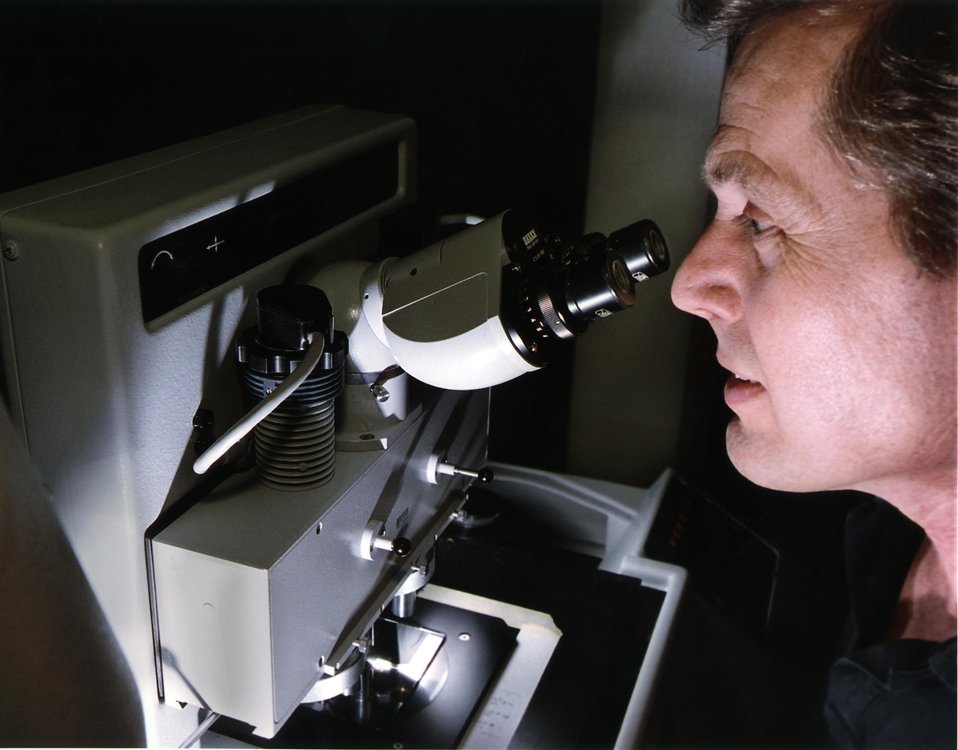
SANDIA SCIENTIST EXAMINES THE PHOTO MASK USED TO MICROFABRICATE THE BIOCAVITY MICROLASER FLOW DEVICE.
A SMART SCALPEL MECHANISM INTENDED TO DETECT THE PRESENCE OF CANCER CELLS AS A SURGEON CUTS AWAY A TUMOR OBSCURED BY BLOOD, MUSCLE AND FAT HAS BEEN DEVELOPED IN PROTOTYPE BY SCIENTISTS AT DOE'S SANDIA LABORATORIES. THE DIME SIZE DEVICE, CALLED A BIOLOGICAL LASER, SHOULD HELP SURGEONS MORE ACCURATELY CUT AWAY MALIGNANT GROWTHS WHILE MINIMIZING THE AMOUNT OF HEALTHY TISSUE REMOVED.